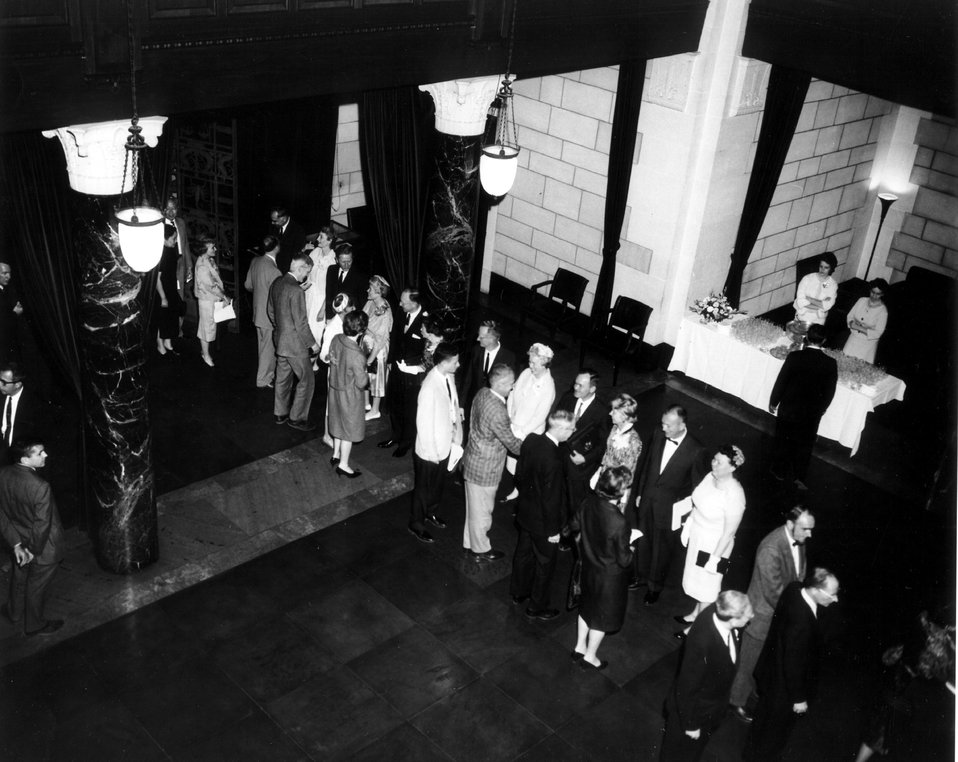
Receiving line at reception in Great Hall. Ernest O. Lawrence Award - 1963. National Academy of Sciences, April 25, 1963.